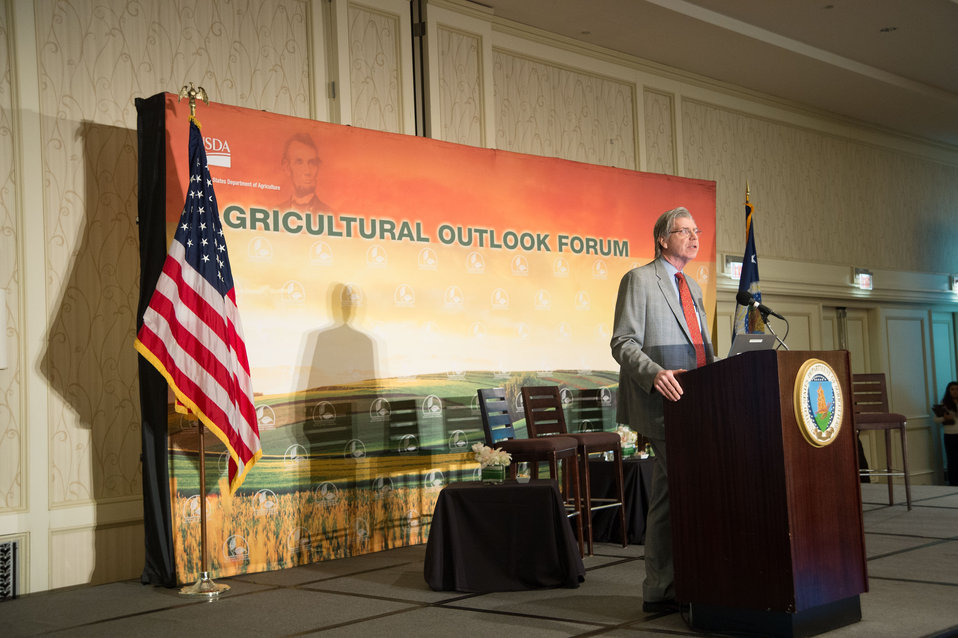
U.S. Department of Agriculture (USDA) Chief Economist Joseph Glauber gives a synopsis of U.S. Agriculture economy at the 2014 Agricultural Outlook Forum in Arlington, VA., on Thursday, Feb. 20, 2014. The U.S. Department of Agriculture's (USDA) annual Agricultural Outlook Forum brings together the agricultural community to discuss policy, trade, science, rural development, and the economic outlook for the coming year. The Forum also focuses on forestry, health and nutrition issues, and the changing dynamics and face of rural America.USDA photo by Bob Nichols.